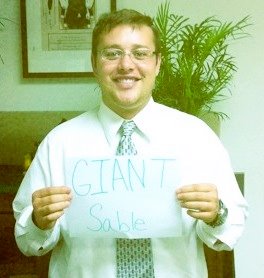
Bryan Watt, 'Giant Sable,'

International Affairs participates in FFI's In Our Hands campaign